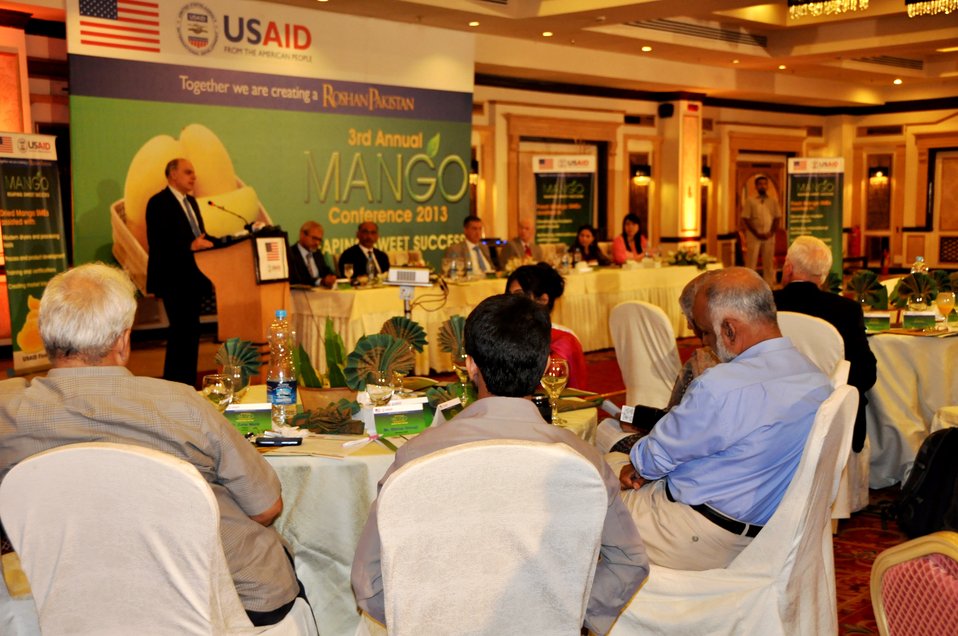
Mango Conference